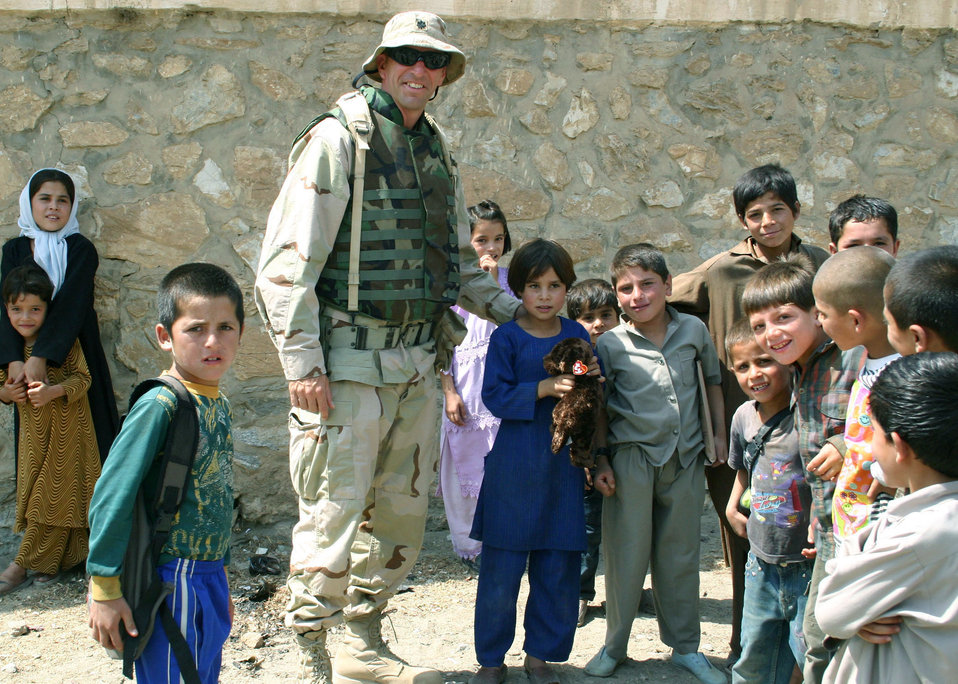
Airfield manager flies U.S. flag for Afghan children's aid

GOLBAHAR, Afghanistan -- Lt. Col. James Kott stands with local orphans here who received shoes, clothes, school supplies, radios, toys and basic toiletries. A flag-flying program raises money to buy goods for the children. Colonel Kott is the 455th Expeditionary Operations Group deputy commander at nearby Bagram Air Base and an Air National Guardsman deployed from Beaver Crystal, Va.